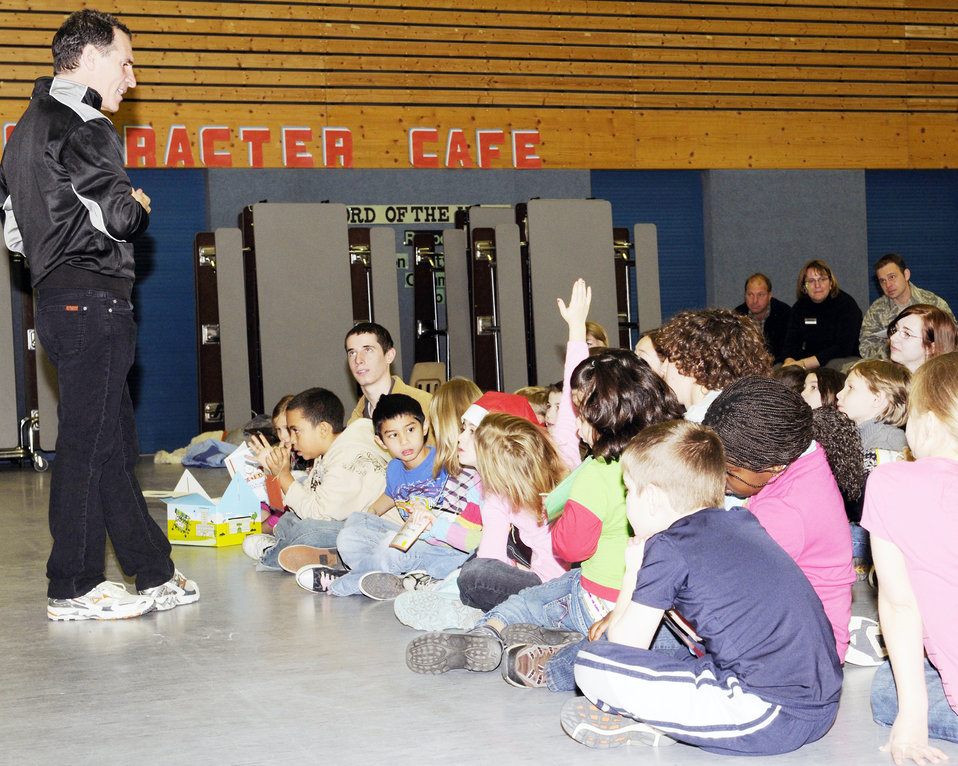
Kits help children cope with deployments

Trevor Romain answers questions from youth at Ramstein Elementary School Dec. 17, 2009, at Ramstein Air Base, Germany. Mr. Romain, a children's author, is the creator of the Air Force Family focused campaign,